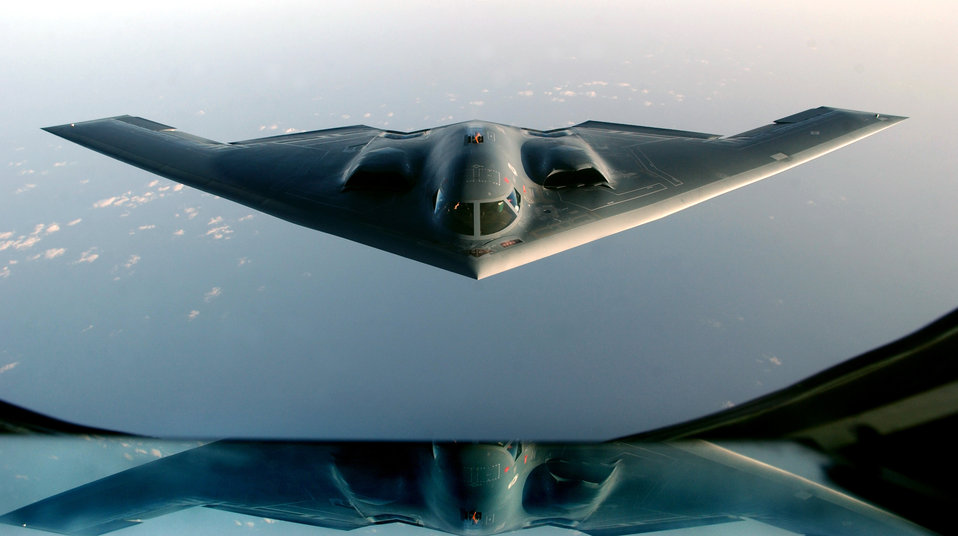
Window seat

OPERATION IRAQI FREEDOM -- A B-2 Spirit, returning from a mission over Iraq, takes on fuel from a KC-135 Stratotanker over the Indian Ocean on March 27.